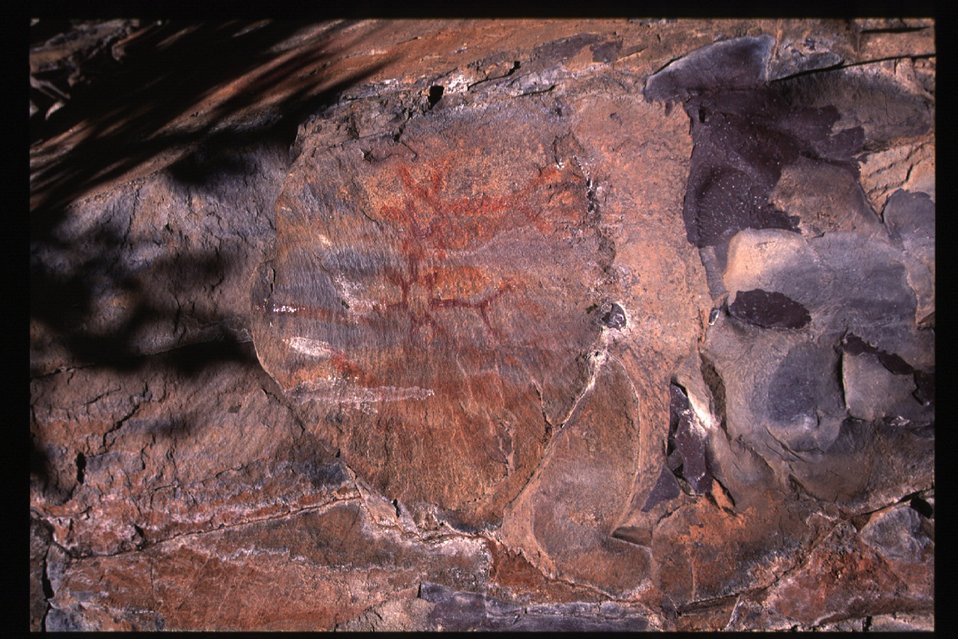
Petroglyphs Lower Salmon River Cottonwood Field Office UCSC Upper Columbia Salmon Clearwater District